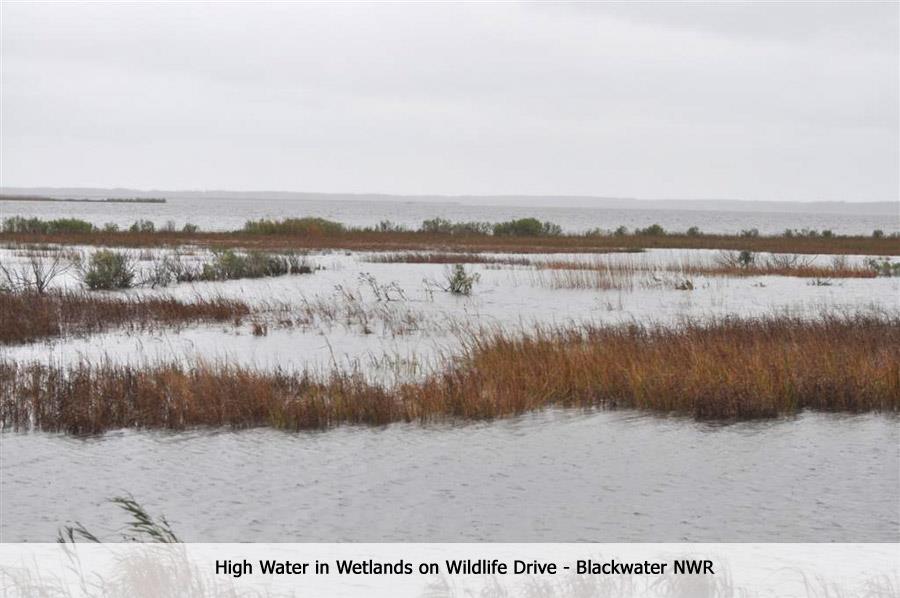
High water in wetlands on Blackwater National Wildlife Refuge - Oct. 30 (MD)

From Wildlife Drive at Blackwater National Wildlife Refuge - Tuesday 10/30